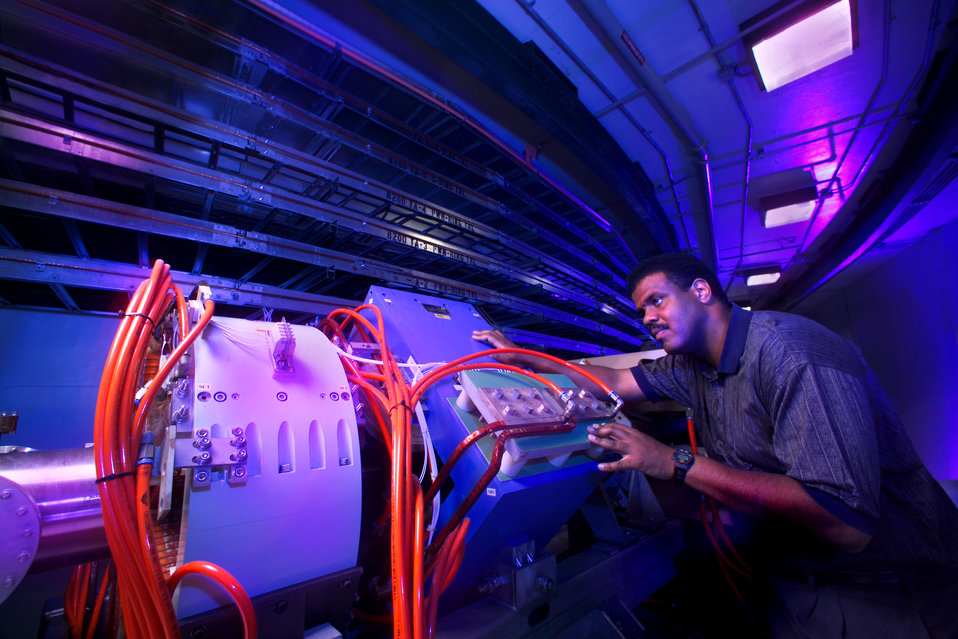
Spallation Neutron Source (SNS)

04-079-2 DOE photo by Lynn Freeny
Spallation Neutron Source (SNS) at an accumulator ring Oak Ridge National Lab. Oak Ridge Tennessee 4-23-2004